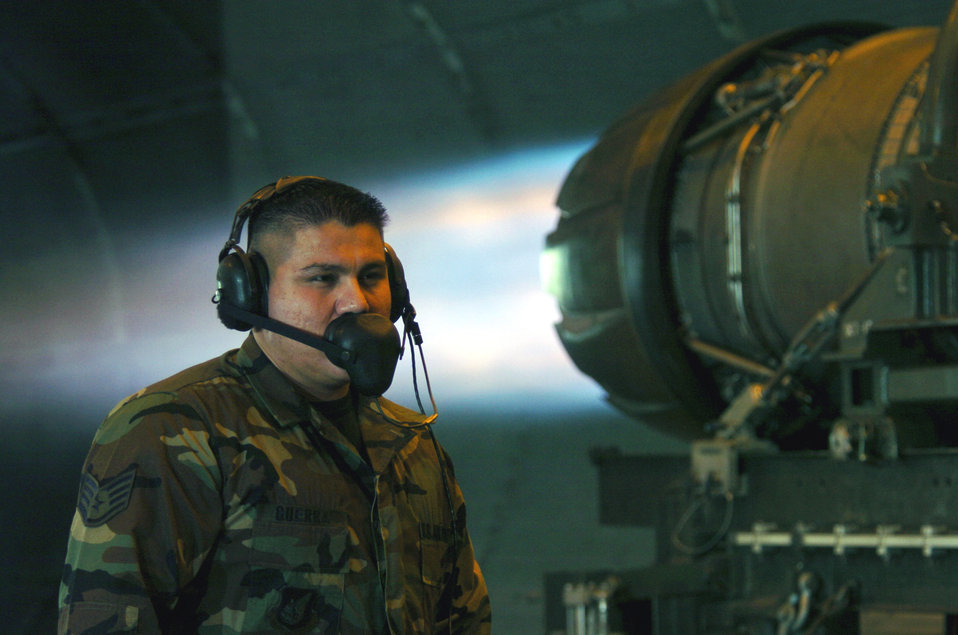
Keep engines running

OSAN AIR BASE, South Korea -- Staff Sgt. Daniel Guerra looks for fuel leaks while an F-16 Fighting Falcon engine